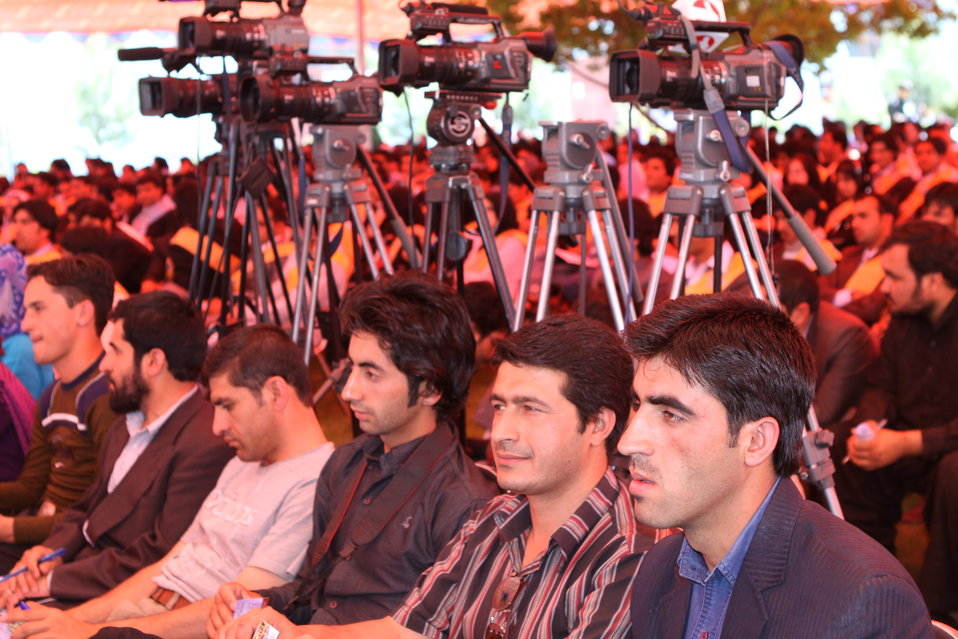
100522 ATVI Graduation 099